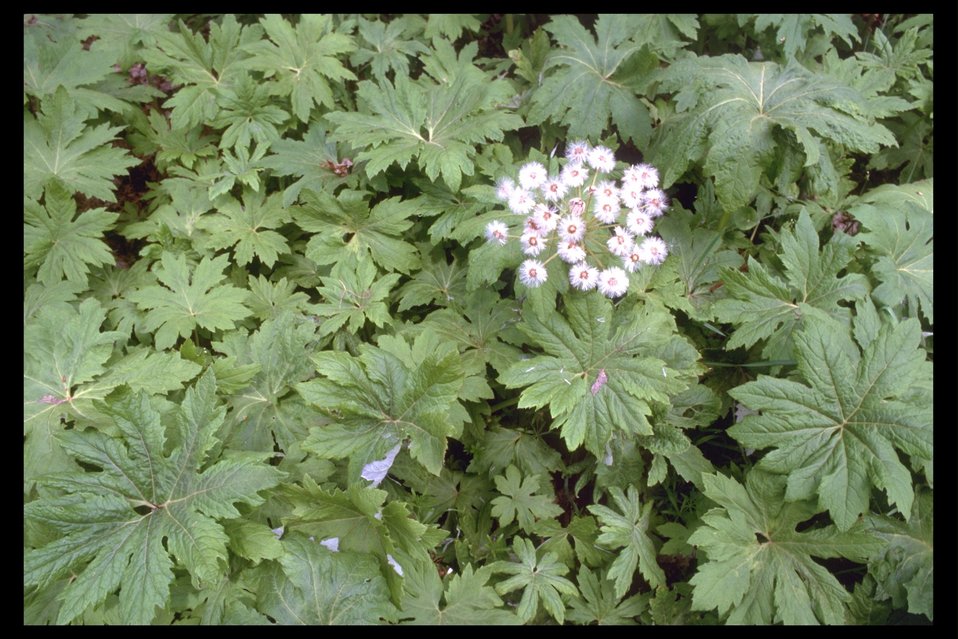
Coltsfoot (Petasites frigidus var. palmatus) found along Rock Creek, a tributary of the West Fork Evans Creek.